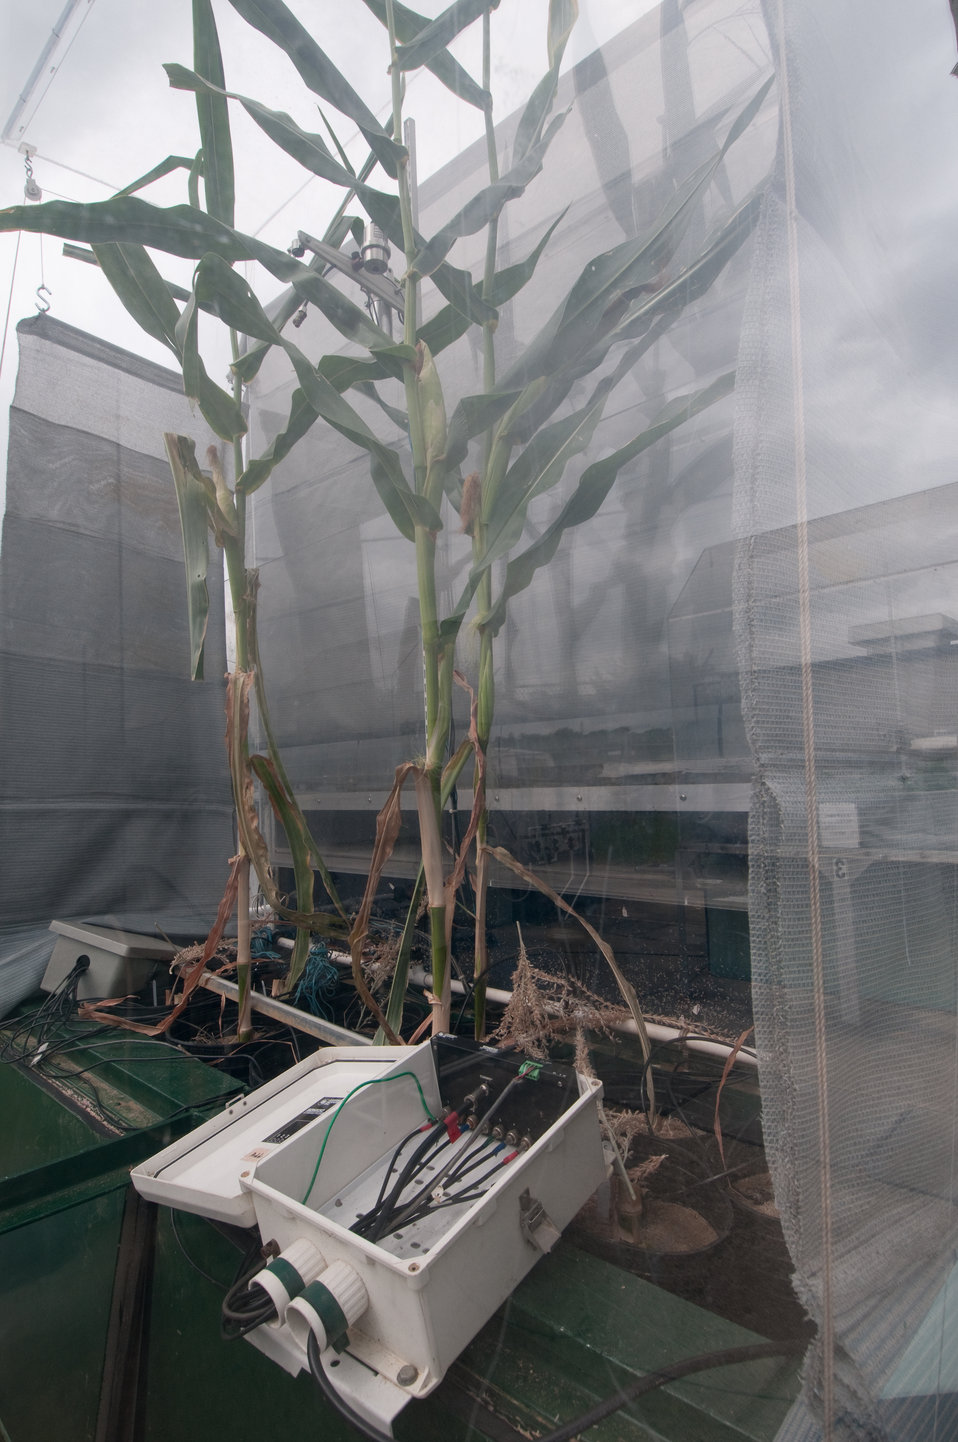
Corn growing an United States Department of Agriculture, Agriculture Research Service, Global Climate Change Lab, Soil Plant Atmosphere Research (SPAR) unit, in Beltsville, MD, on Wednesday, September 21, 2011. SPAR units provide precise control of the major environmental variables influencing crop growth including temperature, humidity, and atmospheric carbon dioxide concentration. The SPAR units are fully automated to measure crop canopy gas exchange including photosynthesis, respiration, transpiration and water use efficiency.